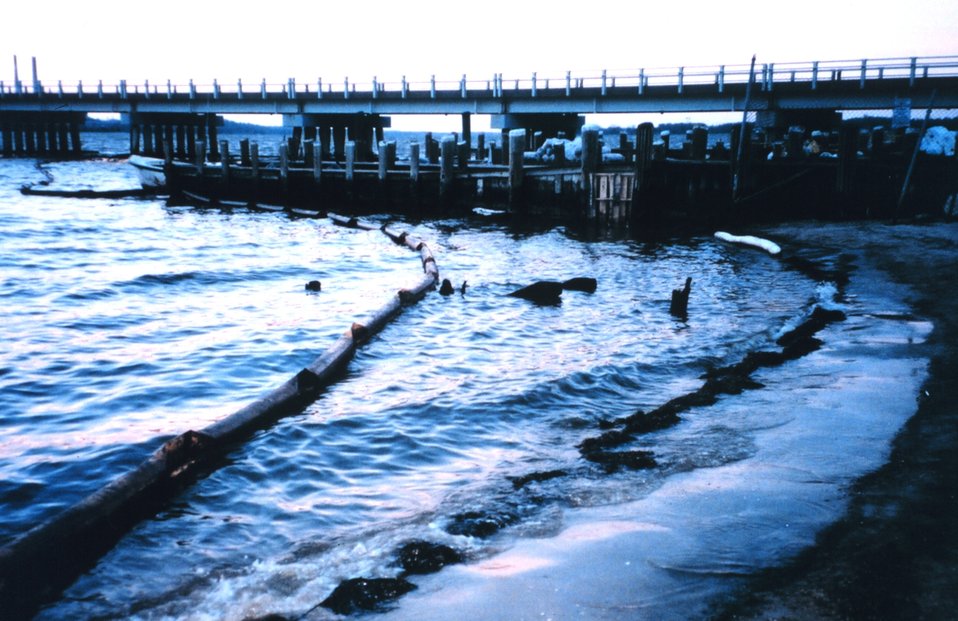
Clean-up area in Benedict as a result of the April 7th oil spill in Swanson Creek, a tributary of the Patuxent River.